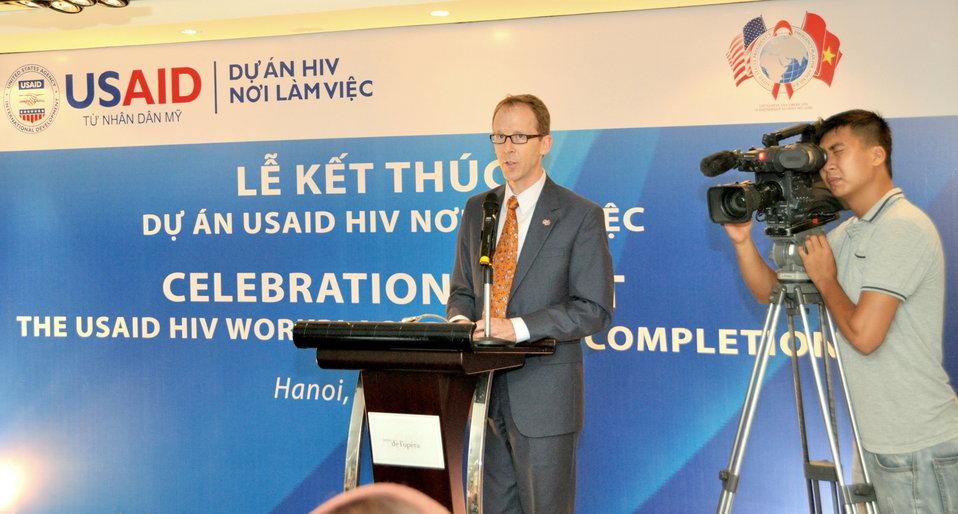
USAID Mission Director Joakim Parker addresses the completion event for the USAID HIV Workplace Project.

Hanoi, June 20, 2013.